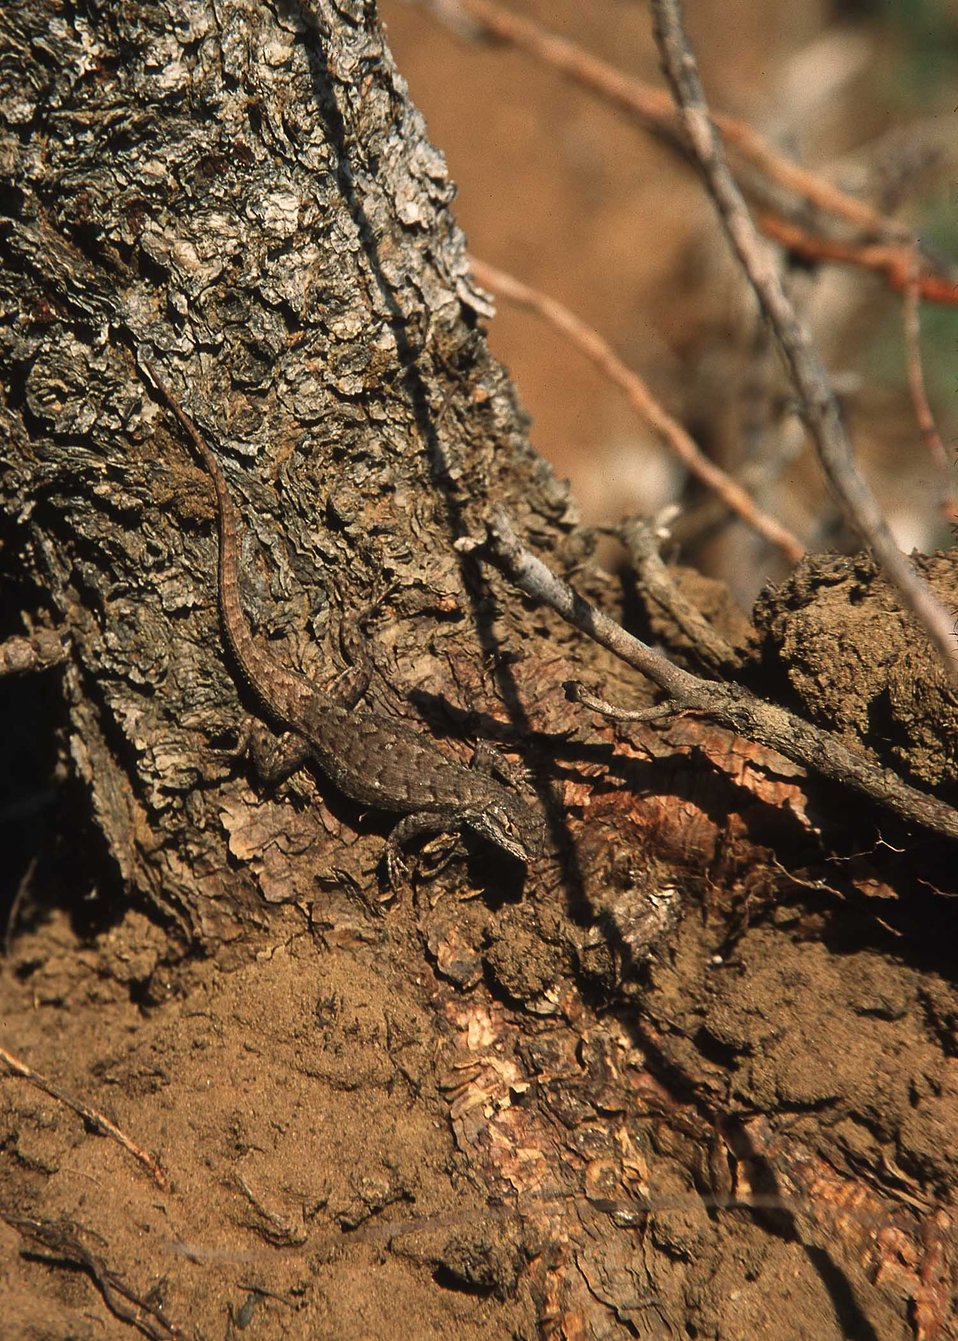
Eastern Fence Lizard.